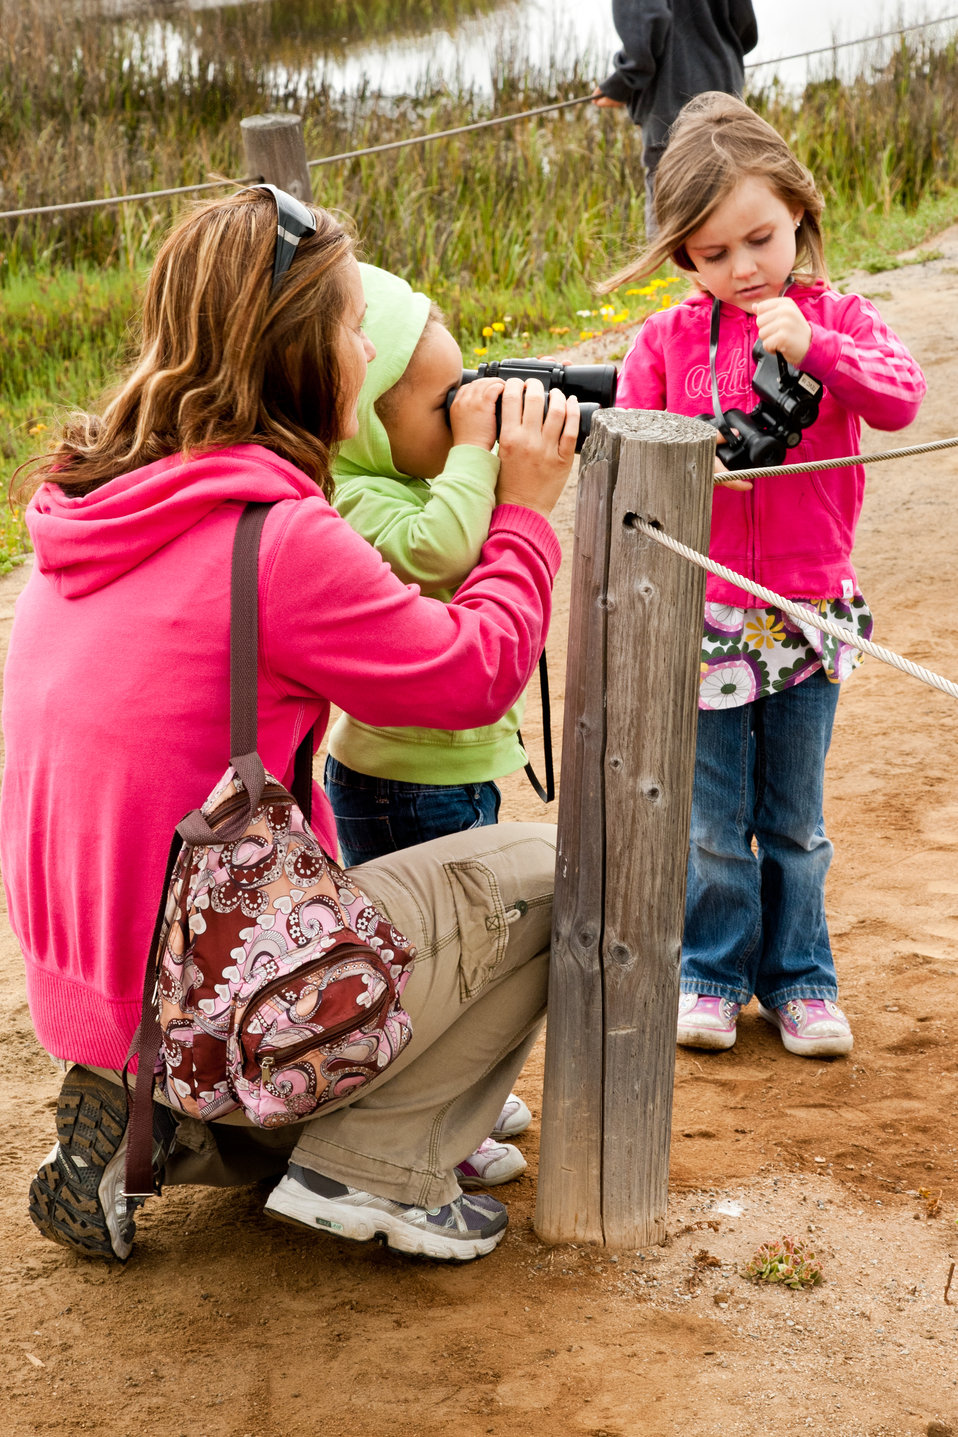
Birding with binoculars takes practice!

A happy family celebrating International Migratory Bird Day 2011 on the TJNWR